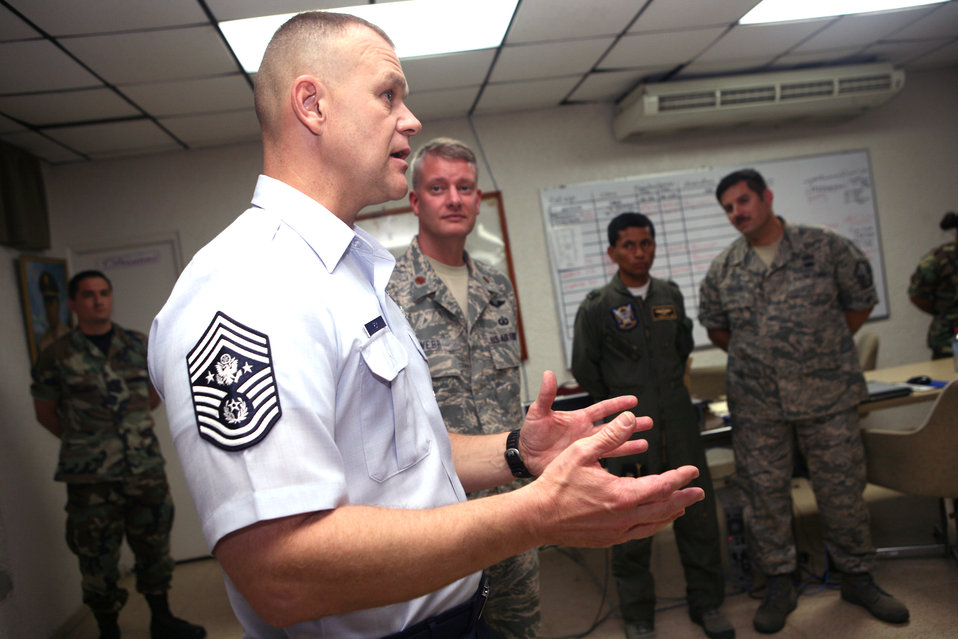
PANAMAX 2009

090919-N-4936C-152 Chief Master Sgt. of the Air Force James A. Roy speaks to Airmen of the 612th Air Expeditionary Communications Squadron and members of the Panamanian Air Service deployed to Capitan Juan Delgado Air Base in Panama City during Fuerzas Aliadas PANAMAX 2009. FA PANAMAX 2009 is a multinational exercise with 20 participating countries tailored to the defense of the Panama Canal, involving over 4,500 personnel from the U. S. Southern Command area of focus. U.S. Navy photo by Mass Communication Specialist 1st Class David P. Coleman